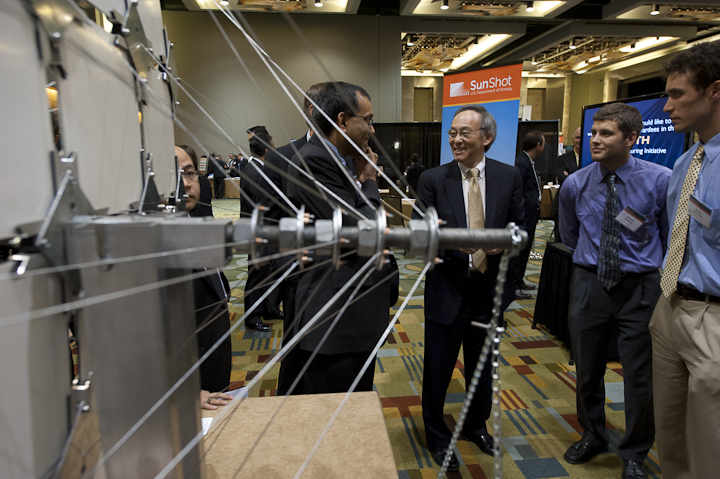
SunShot

June 13, 2012- Steven Chu, Secretary of Energy, U.S. Department of Energy is reflected in a Suspension Heliostat made by Solaflect Energy at the Technology Forum at the SunShot Grand Challenge Summit and Technology Forum in Denver, Colorado.